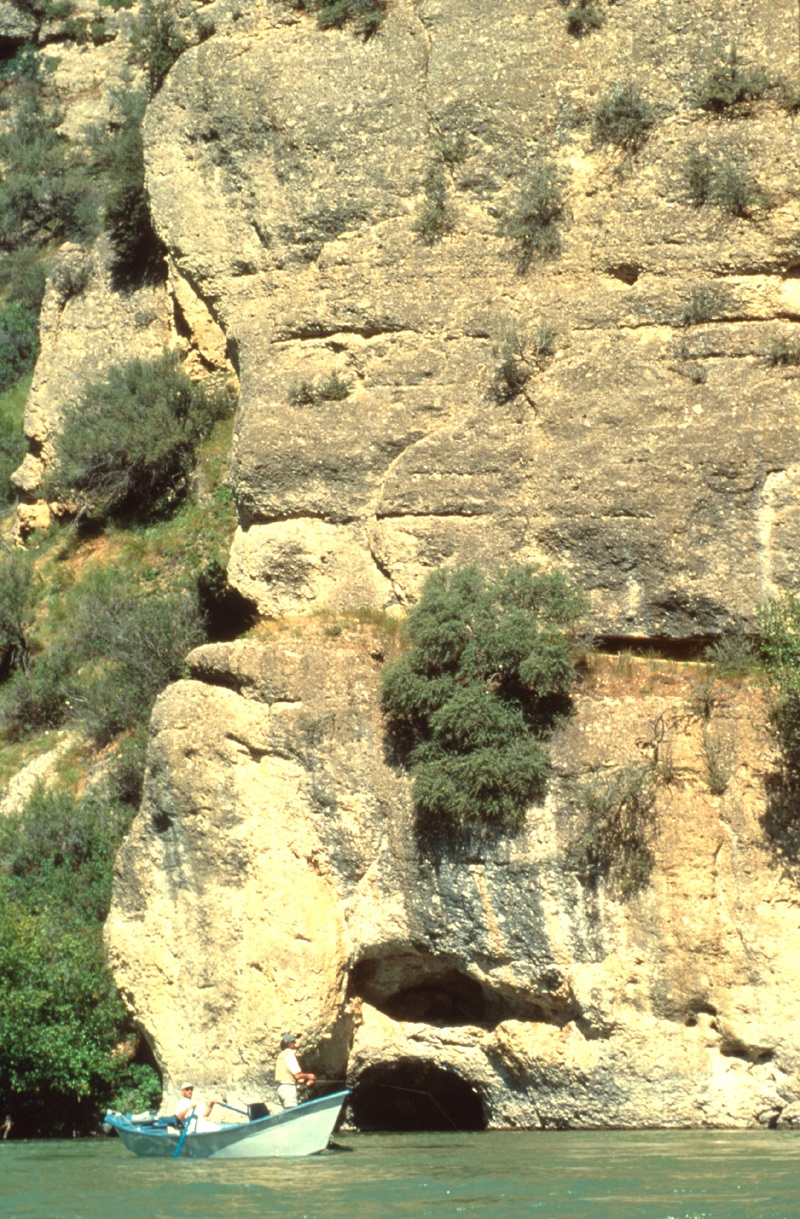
South Fork of the Snake River